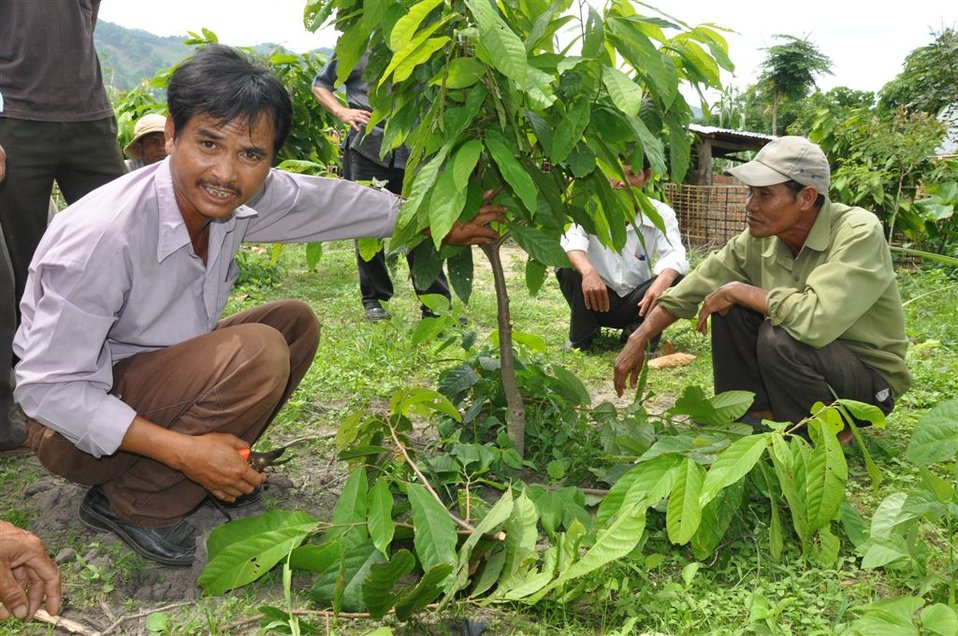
Local populations benefit from new cocoa crop techniques and market access.